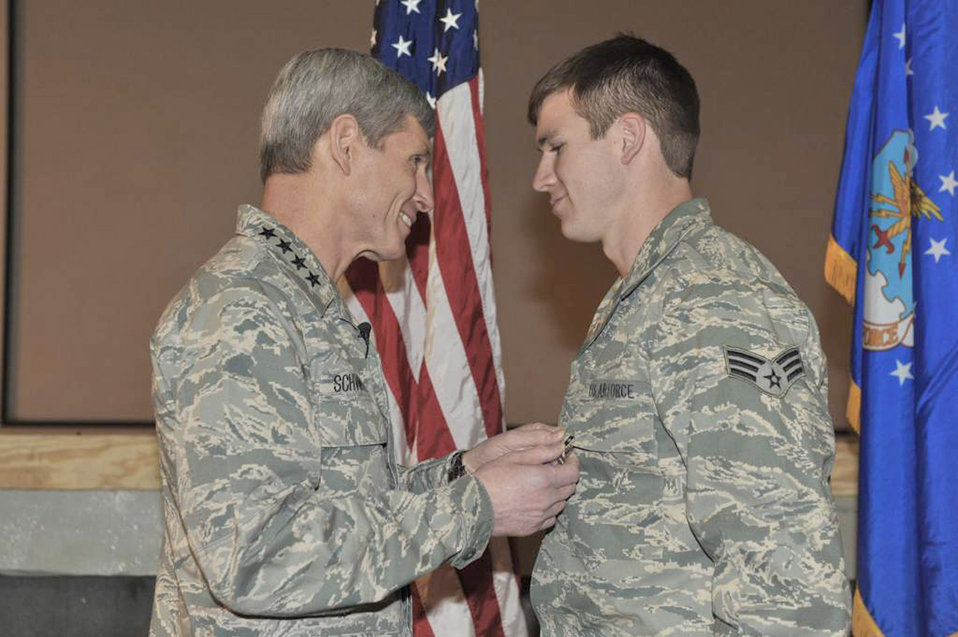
Purple Heart presentation

Air Force Chief of Staff Gen. Norton Schwartz pins a Purple Heart medal on Senior Airman Brandon Cullen Towle, a joint terminal attack controller assigned to the 817th Expeditionary Air Support Operations Squadron, during a ceremony at Bagram Airfield, Afghanistan, on Jan. 19, 2011.